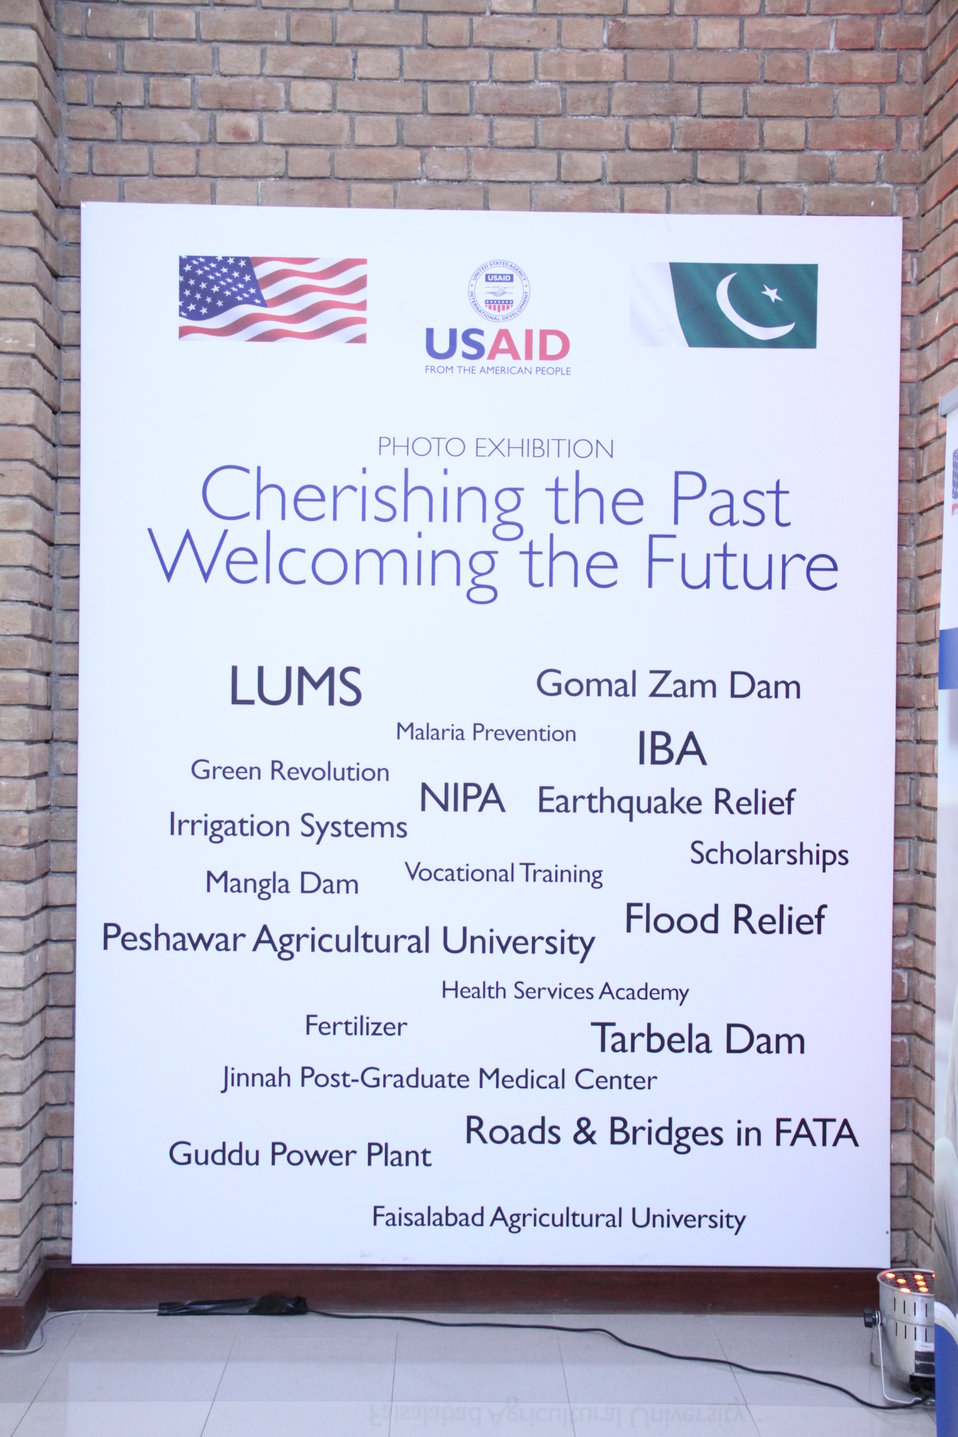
Photo Exhibition Celebrate US-PAK Cooperation at PNCA, Islamabad on April 13, 2012